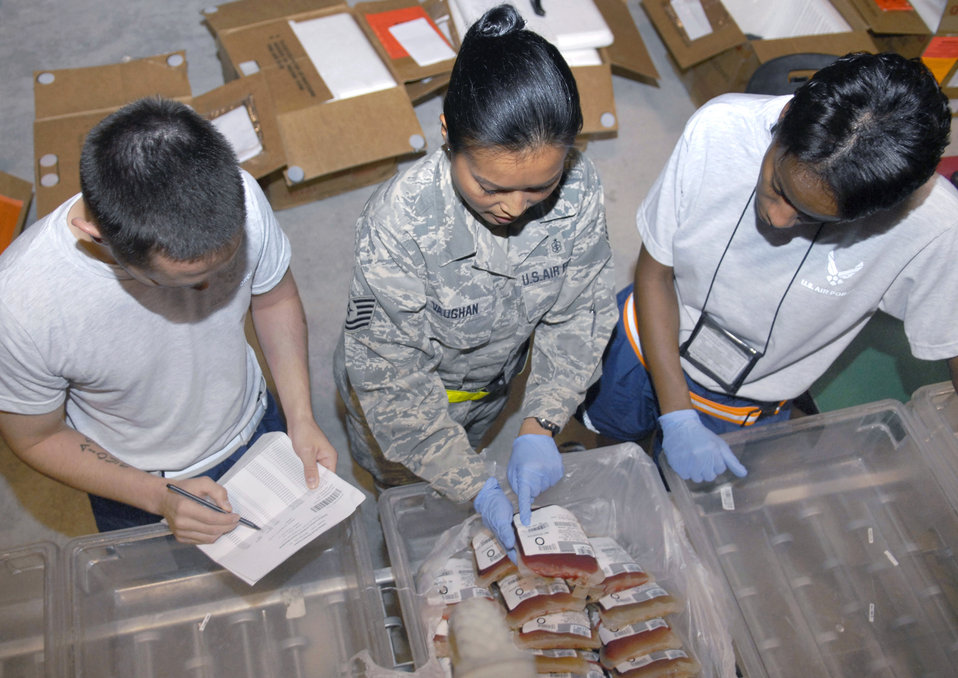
Blood Transshipment Center

Tech. Sgt. Marilou Vaughan (center), a 379th Expeditionary Medical Group Blood Transshipment Center lab technician, shows Staff Sgt. Anthony Bradford and 1st Lt. Jacquelyn Smith, both volunteers from the 379th EMDG at this air base in Southwest Asia, where to find the unit number on frozen blood units here May 9. The BTC staff uses base volunteers to assist in checking incoming blood product packaging for damage before the products are distributed throughout the U.S. Central Command area of responsibility.